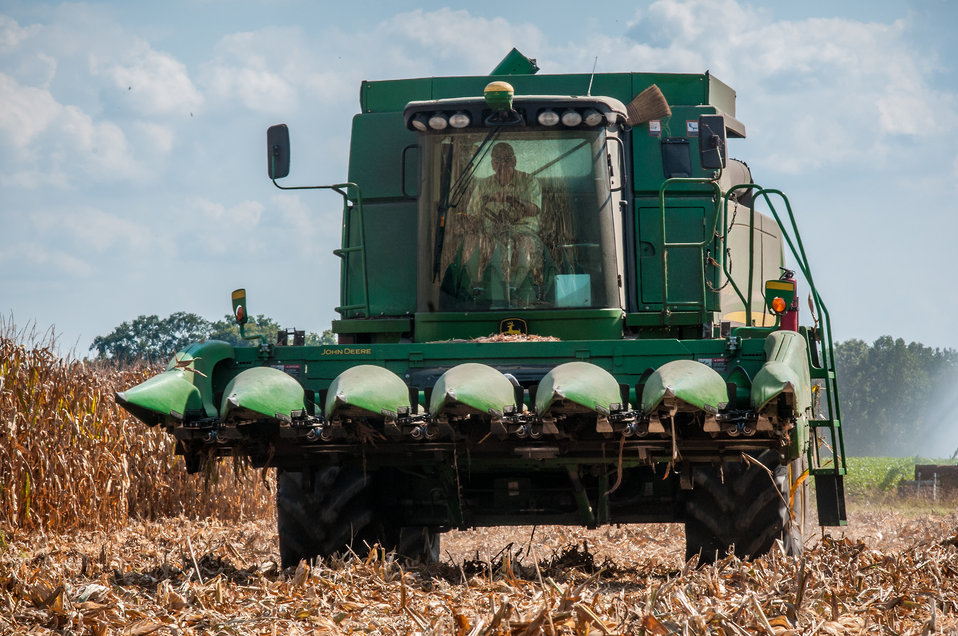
John N. Mills, Jr. operates his six-row corn harvester during the feed corn harvest at the John N. Mills & Sons farm; a family owned business located in the Hanover and King William Counties of Virginia, on Friday, Sept. 20, 2013. Pleasant Level Farm was the original farm from a Land Grant from King George III of England to Nicholas Mills in 1725. The original acreage has never left the Mills family name and continues to be farmed by the family.
Now the farm covers 5,744 acres that produce corn, wheat, soybeans, barley, hay, timber, and pastures a large herd of beef cattle. They have been using conservation and stewardship practices since the 1960s. Some of the efficient practices include no-till planting and cover crops to reduce soil erosion and prevent the leaching of nutrients into ground water, as well as livestock stream exclusion. The farm has several conservation easements that aids in the preservation and restoration of wetlands and waterways. For information about the U.S. Department of Agriculture (USDA), please go to www.usda.gov.